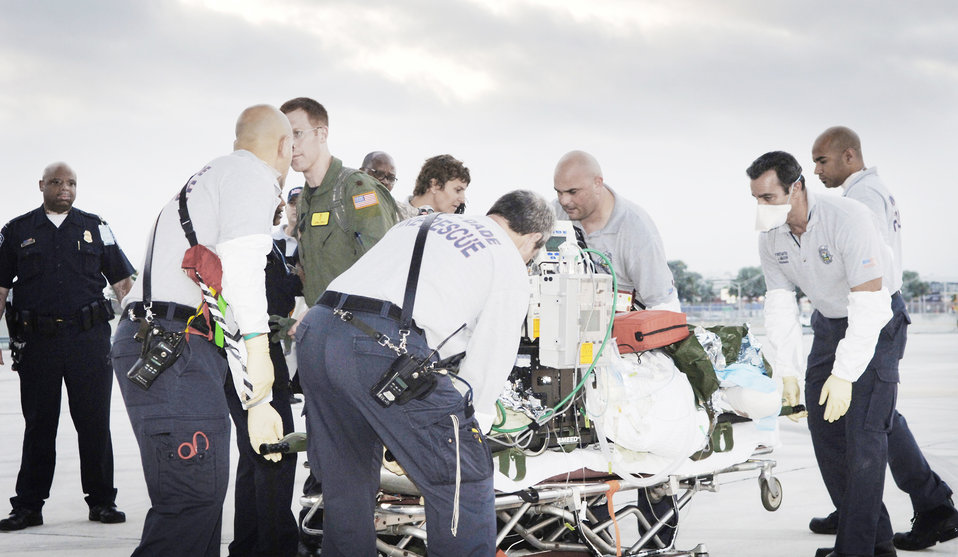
CCATT

Emergency medical technicians from Miami-Dade Fire Rescue work with Air Force critical care air transport team members at Miami International Airport Jan. 23, 2010, to offload patients from an Air Force aeromedical evacuation flight that arrived from Port-au-Prince. The CCATT accompanied the patients from Haiti, providing critical care while airborne.